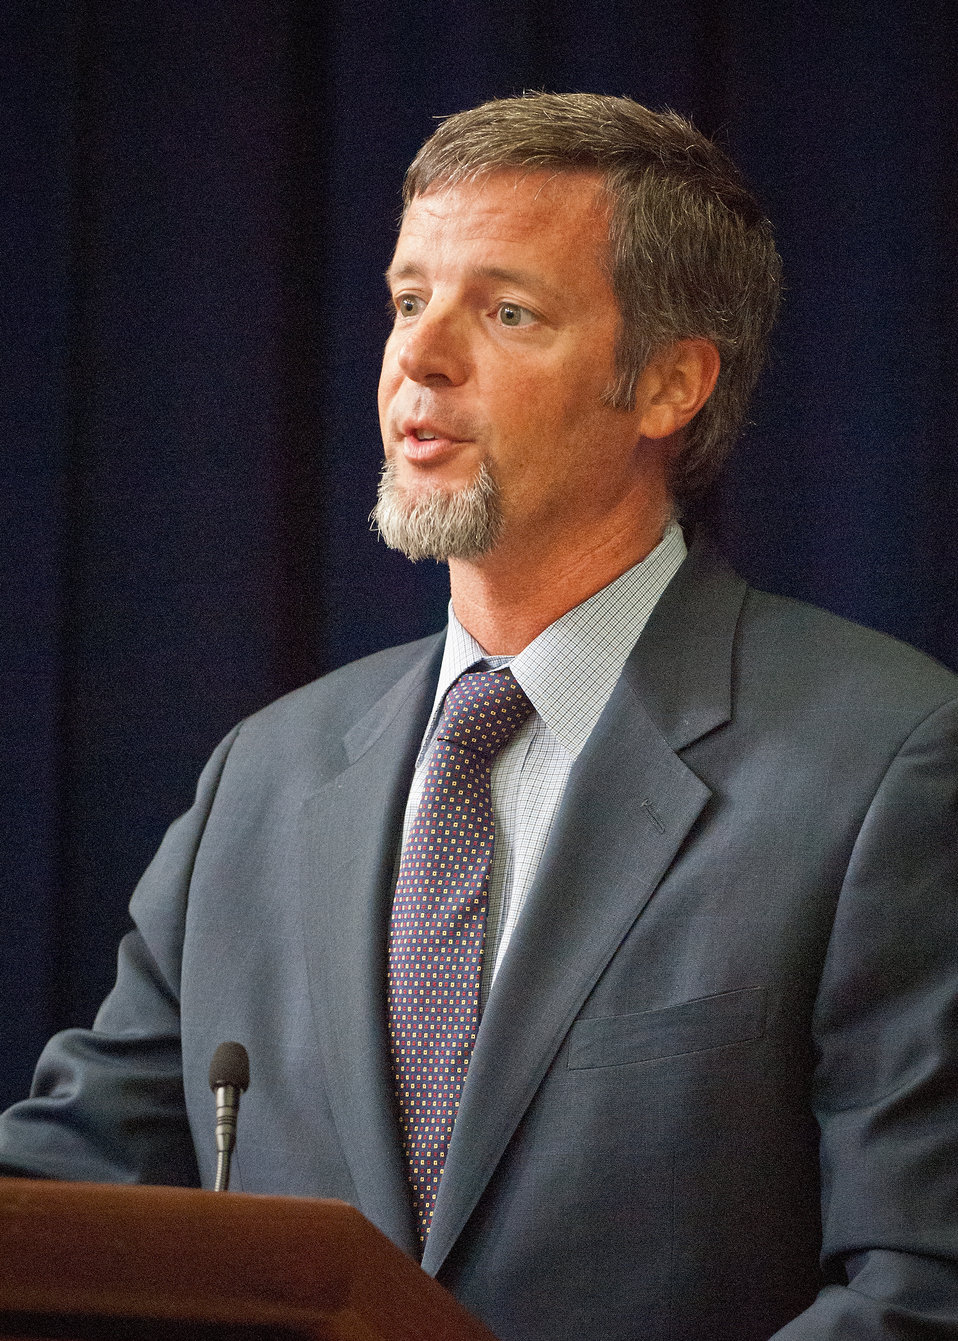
Doug Kalip, White House, Domestic Policy Council discussed President Obama’s and the White House efforts in improving agriculture and rural America at the 11th Annual Meeting of State Agriculture and Rural Leaders at the Eisenhower Executive Office Building in Washington, D.C., on Friday, January 6, 2012.